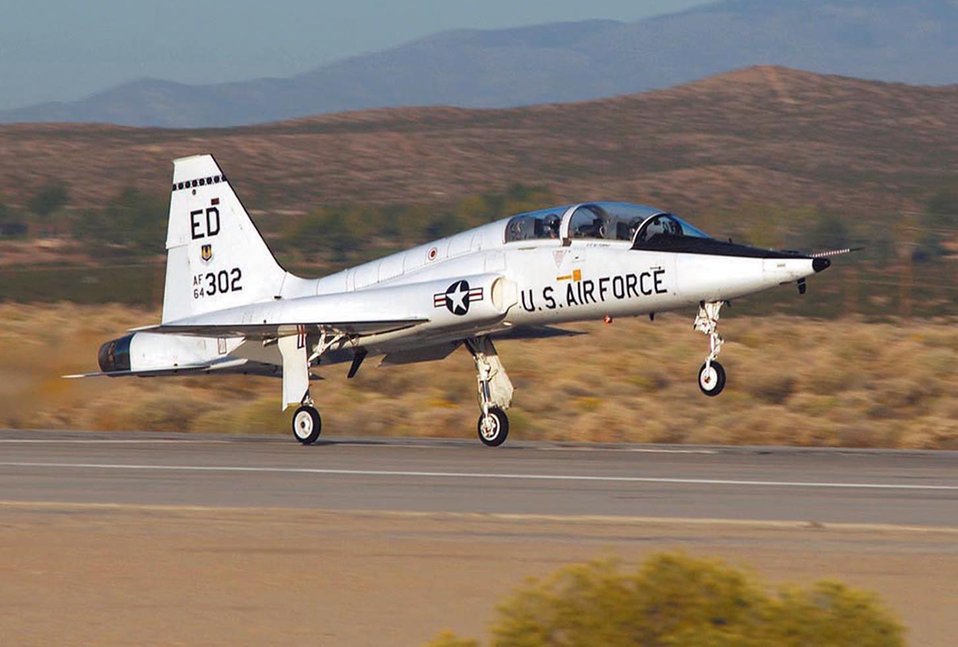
Edwards tests single-engine takeoffs

EDWARDS AIR FORCE BASE, Calif. -- A T-38 Talon takes off from here with only one engine during single-engine takeoff testing. The high-risk testing the aircraft is undergoing will help determine the safest single engine takeoff speed for the aircraft if an engine fail during takeoff.